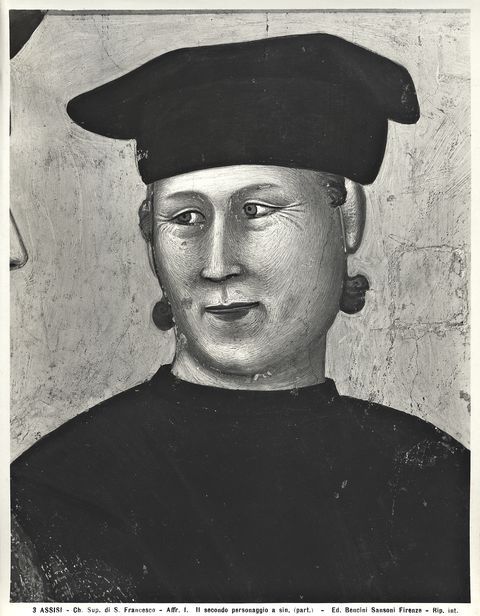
'giotto', omaggio dell'uomo semplice 06